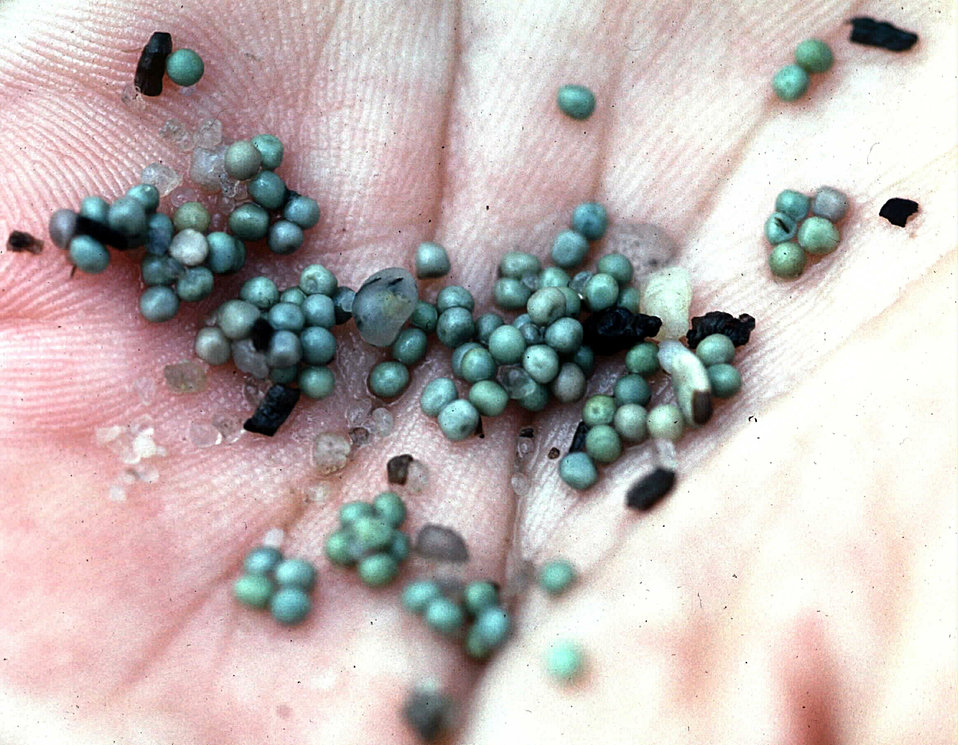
Horseshoe crab eggs in hand

Mispillion Harbor, Delaware.